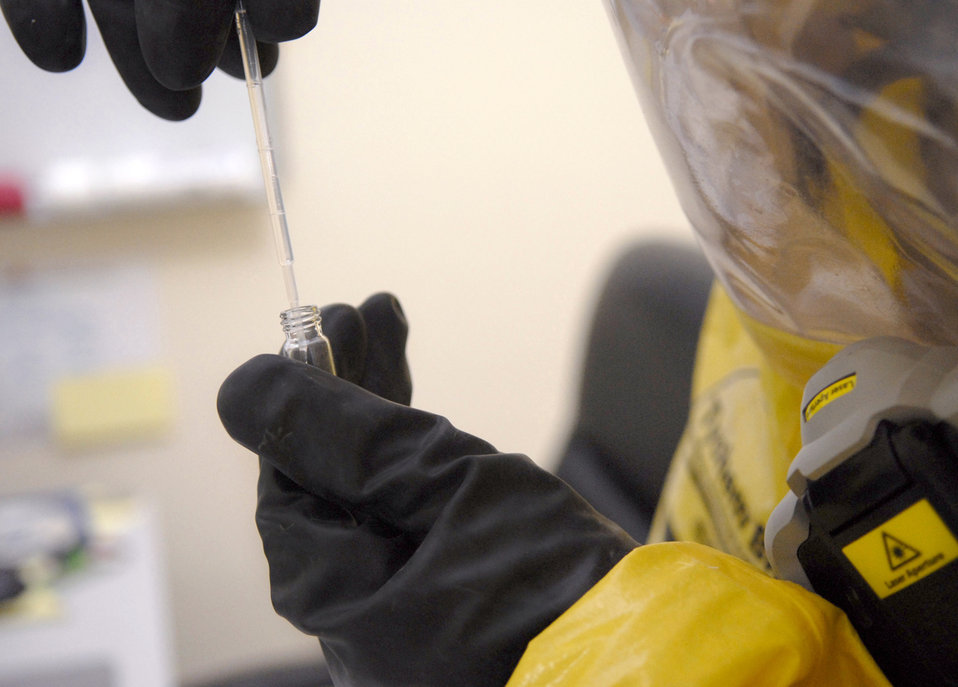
Who you gonna call?

Staff Sgt. Trevor Fettig prepares to analyze a liquid sample for contamination during a unit exercise March 27 at an air base in Southwest Asia. Sergeant Fettig, a readiness and emergency management journeymen with the 379th Expeditionary Civil Engineer Squadron, hails from Lompoc, Calif., and is deployed from Travis Air Force Base, Calif.